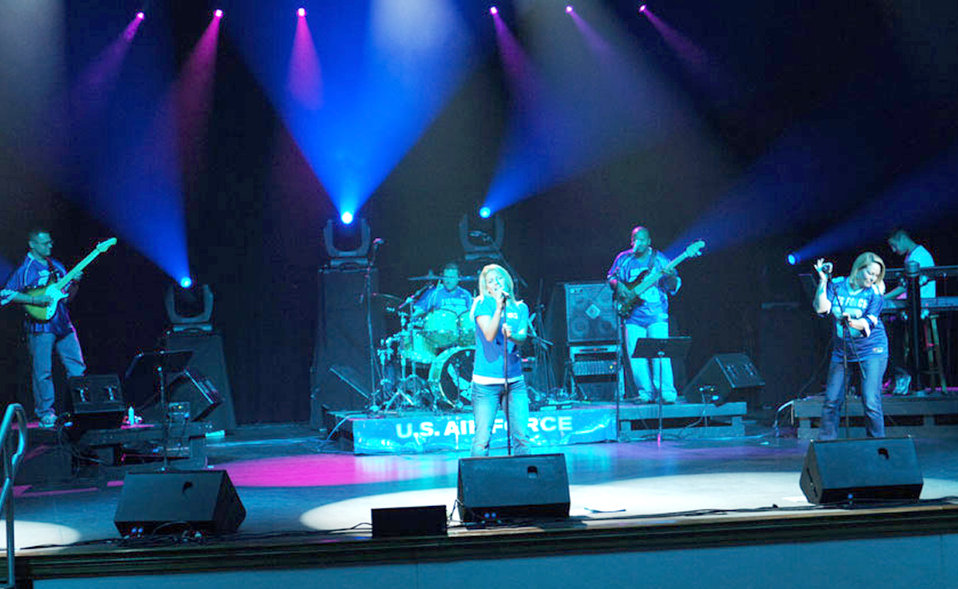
Air Force musicians take a visible stand against drug abuse

The Air Force Band of the West's Top Flight musical group provides a sneak preview to community leaders of their show to promote a drug-free lifestyle during the Red Ribbon week concerts held in San Antonio.